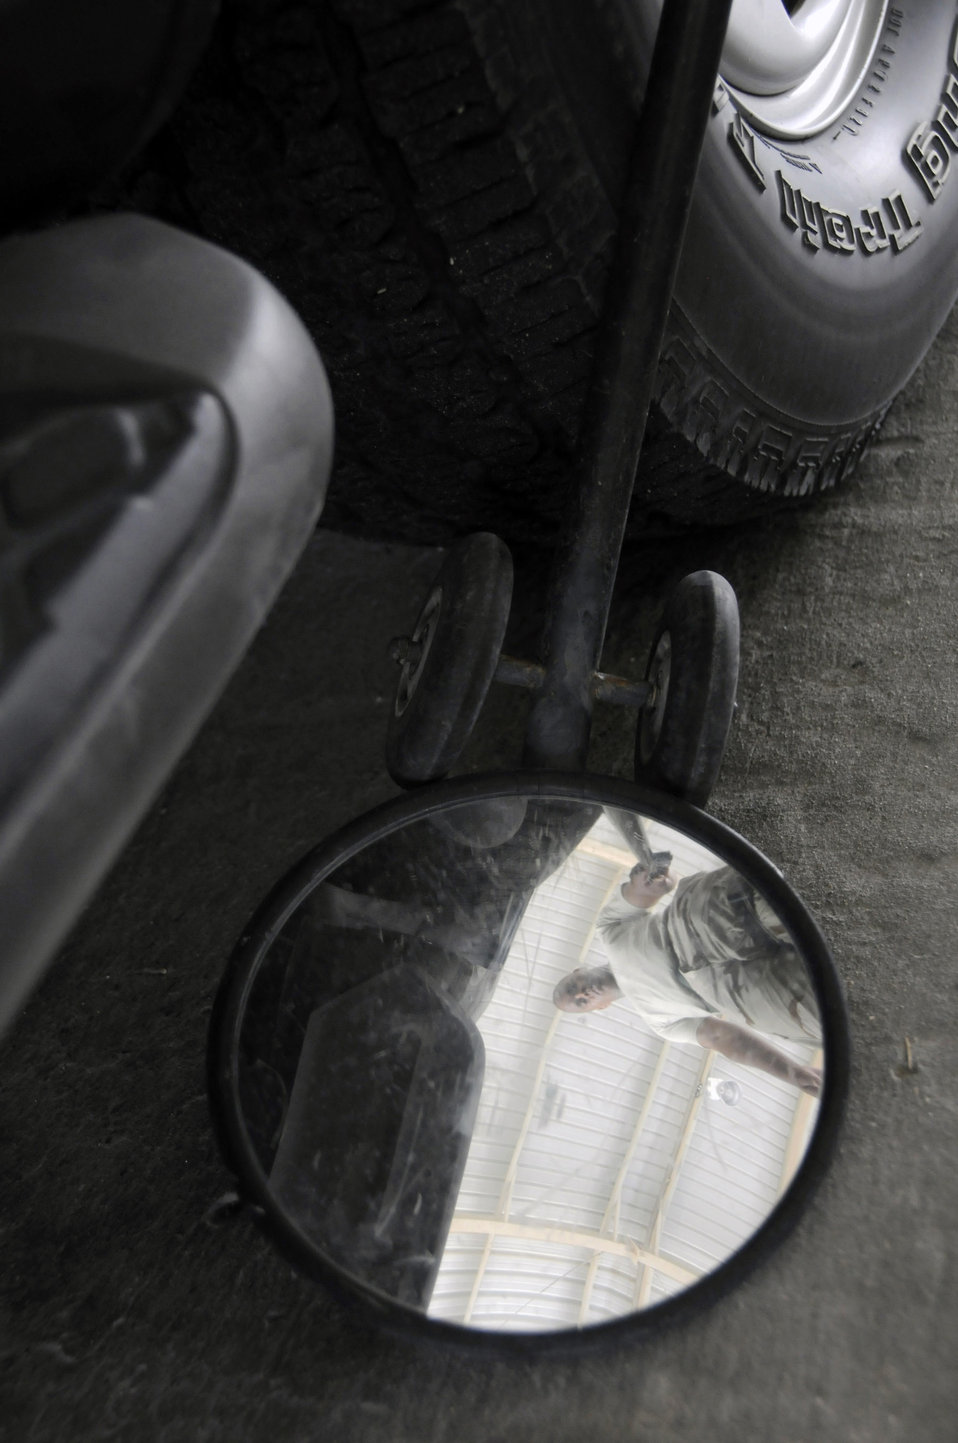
Nothing gets past us

Senior Airman Ron Turner, a search member assigned to the 379th Expeditionary Security Forces Squadron, uses a search mirror to inspect the undercarriage of a vehicle Aug. 19 at an air base in Southwest Asia. Airman Turner and the rest of his team ensure the safety and security of the air base by carefully inspecting all incoming vehicles for explosives and weapons. Airman Turner, a native of Jacksonville, Fla., is deployed from Randolph Air Force Base, Texas.